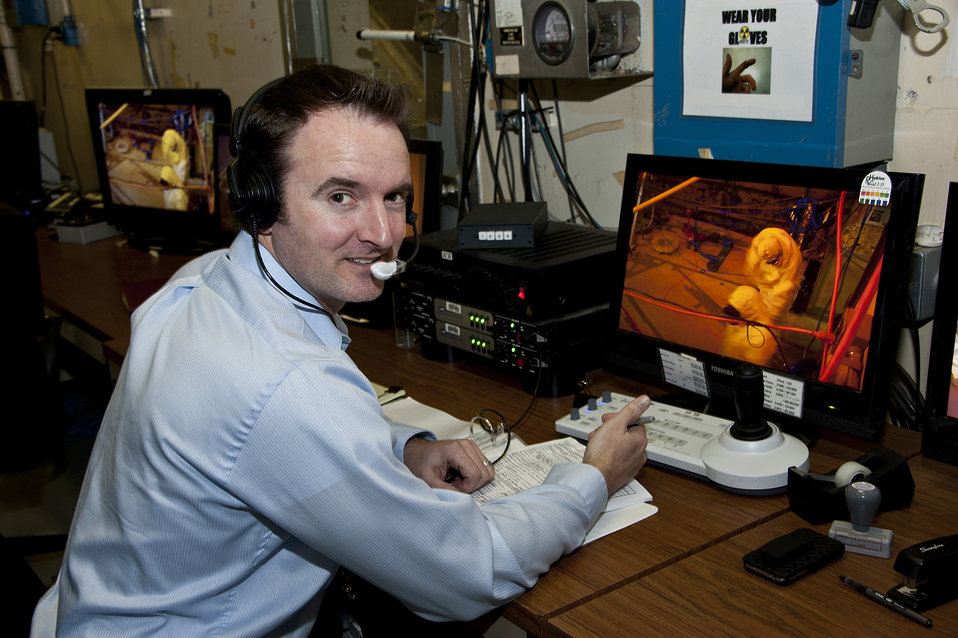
Kole Helvie, SRNS

Kole Helvie, an operations specialist for the SRS transuranic (TRU) waste remediation project, has completed more than 150 training and safety courses as part of his employment at SRS.